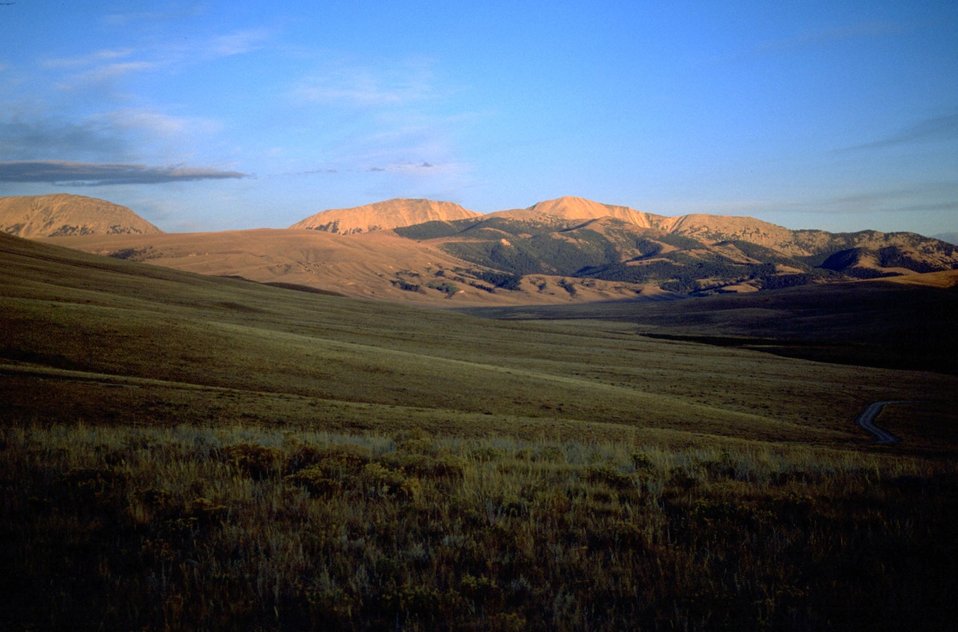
Sun setting on the mountains above campground